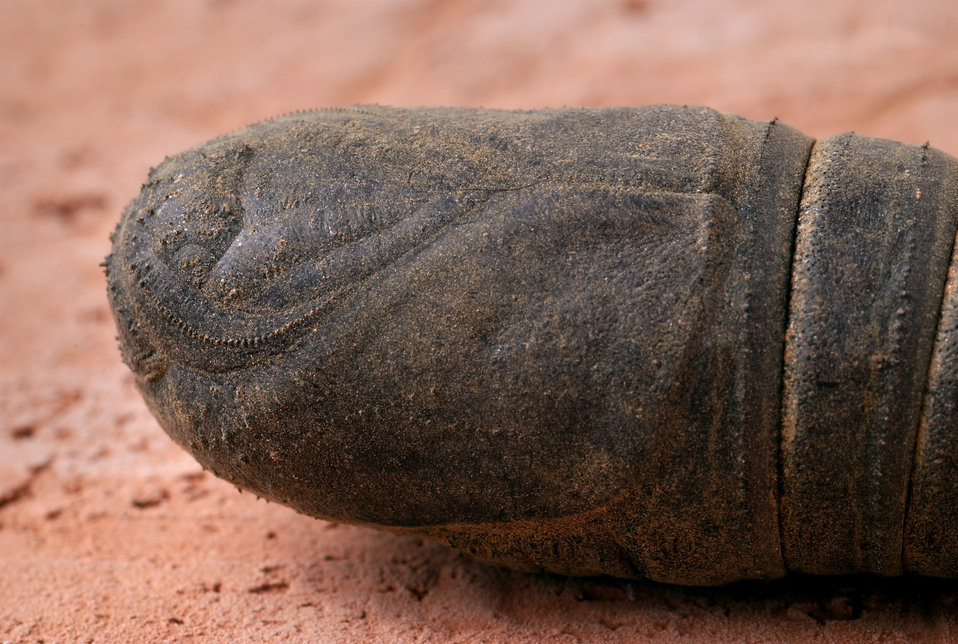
This 2008 image depicts a ventral view, i.e., from below, of a Regal Moth, Citheronia regalis pupa.